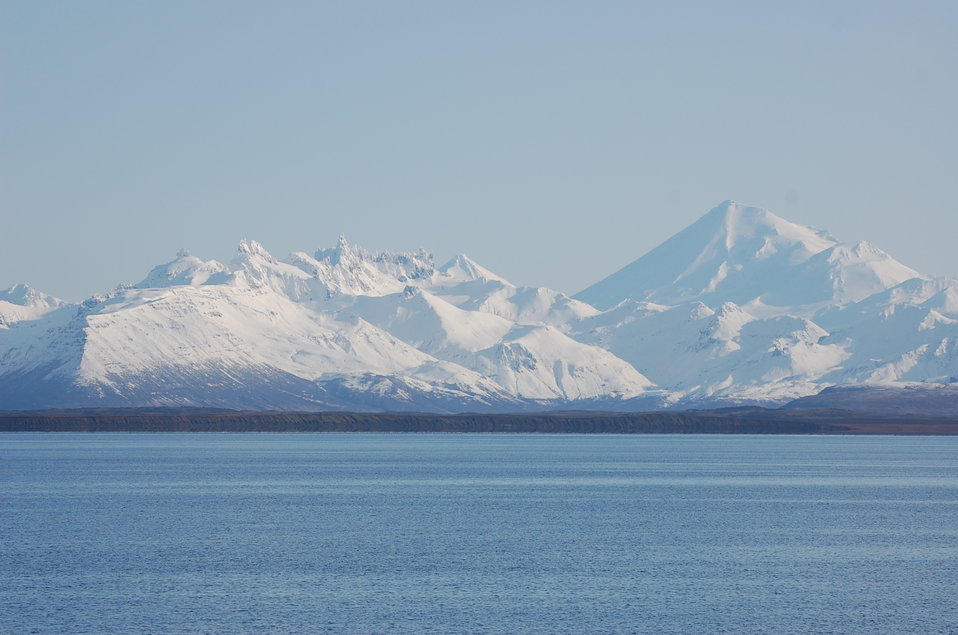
Aghileen Pinnacles and Pavlof Volcano

View across Cold Bay, Izembek National Wildlife Refuge